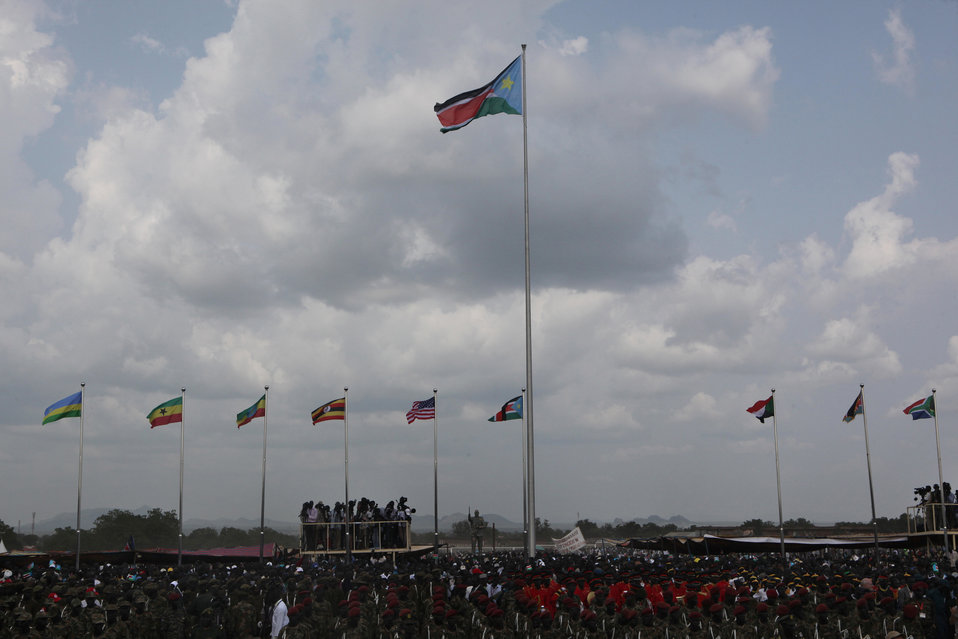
South Sudan Independence Day

A crowd of thousands stands under the newly hoisted Republic of South Sudan flag during celebrations in Juba, South Sudan on July 9, 2011.